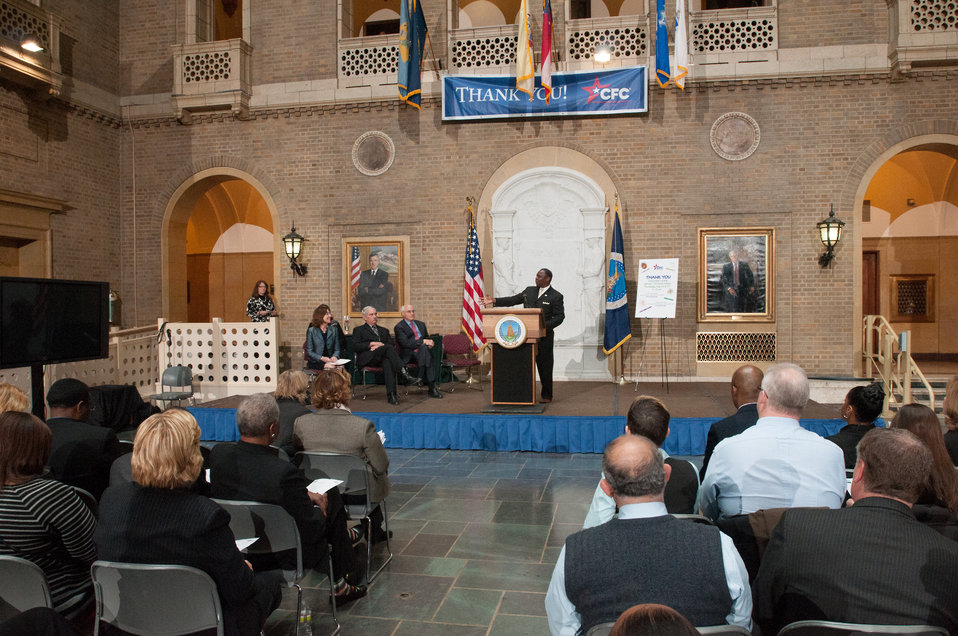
U.S. Department of Agriculture’s (USDA) Combined Federal Campaign (CFC) Co-Manager Arthur Bryant is the Master of Ceremonies for the 2012 Combined Federal Campaign Awards Ceremony, Thursday, Mar. 21, 2013, in the USDA Whitten Building Patio, Washington D.C.